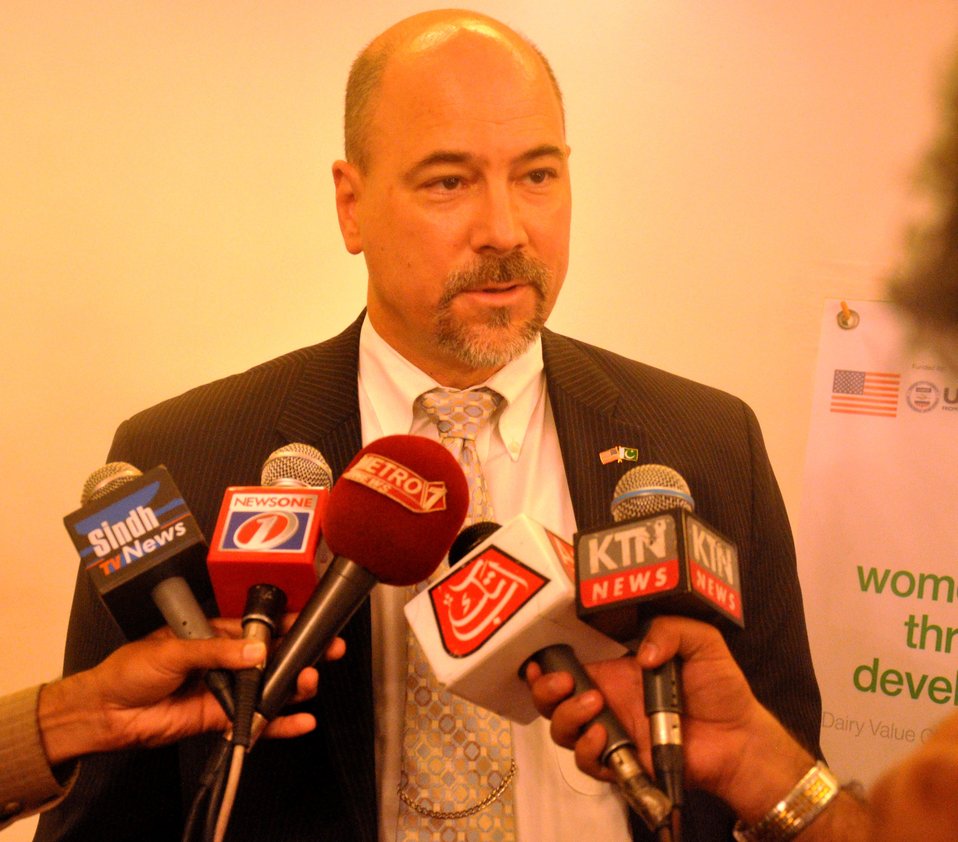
Successful completion of USAID’s Entrepreneurs Project - WELD

Mr. Leon S. Waskin, USAID’s Regional Director for Sindh, congratulated dairy farmers of Sindh and South Punjab on completion of Entrepreneurs Project